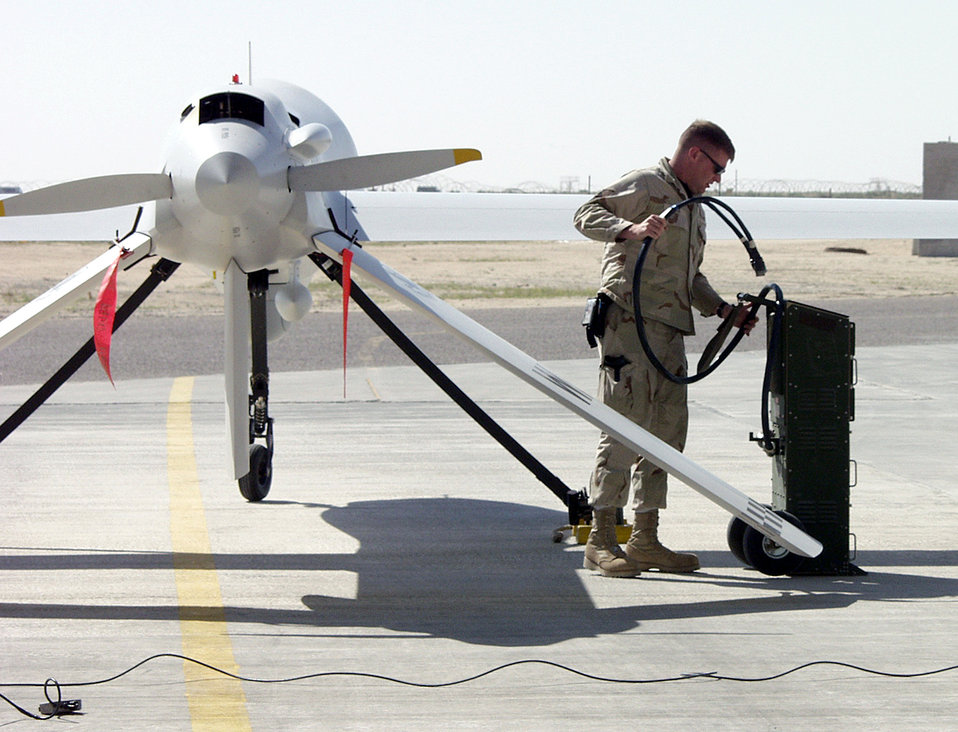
Engine start

OPERATION IRAQI FREEDOM - Staff Sgt. James Barr, a maintenance member of the 46th Expeditionary Reconaissance Squadron,connects an aircraft starter cart to an RQ-1 Predator to start the engine for a mission. Operation Iraqi Freedom is the multinational coalition effort to liberate the Iraqi people, eliminate Iraq’s weapons of mass destruction and end the regime of Saddam Hussein.